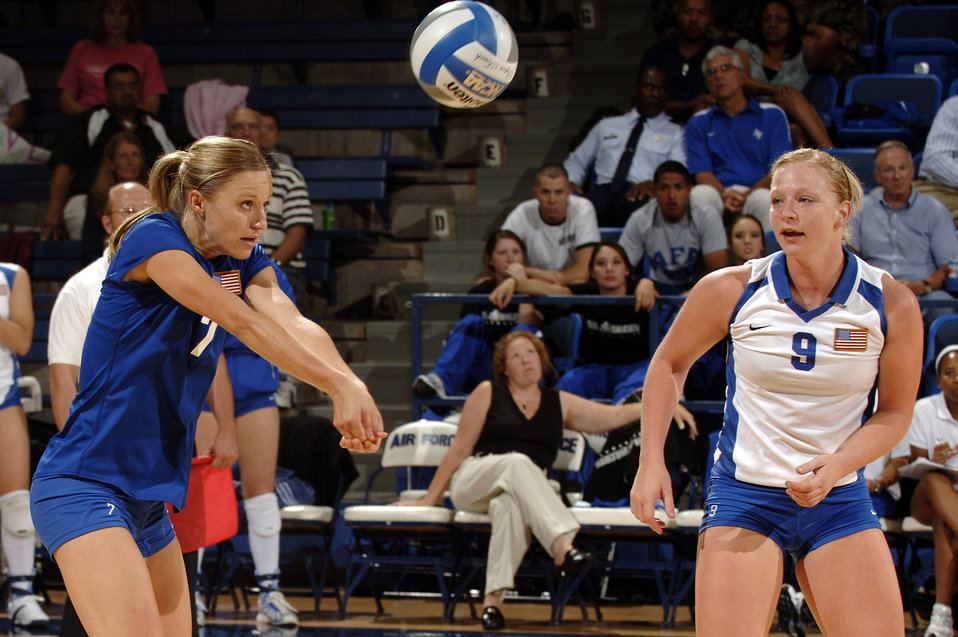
Cadets place second at volleyball invitational

U.S. Air Force Academy senior Morgan Dolan two hands a return against Chicago State as junior teammate Kristina Stewart looks on Aug. 24 at Clune Arena at the Academy in Colorado. The Falcons swept the Cougars, 3-0, in the opener of the Air Force Invtational.